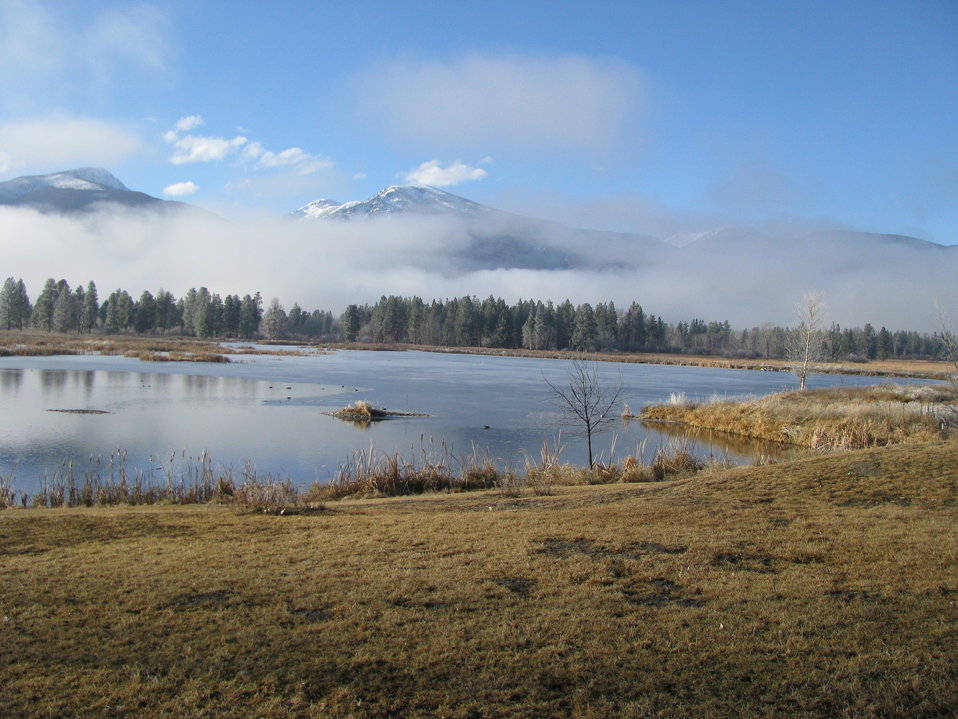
January Ice Fog

Ice fog hanging over Bitterroot River at Lee Metcalf National Wildlife Refuge.